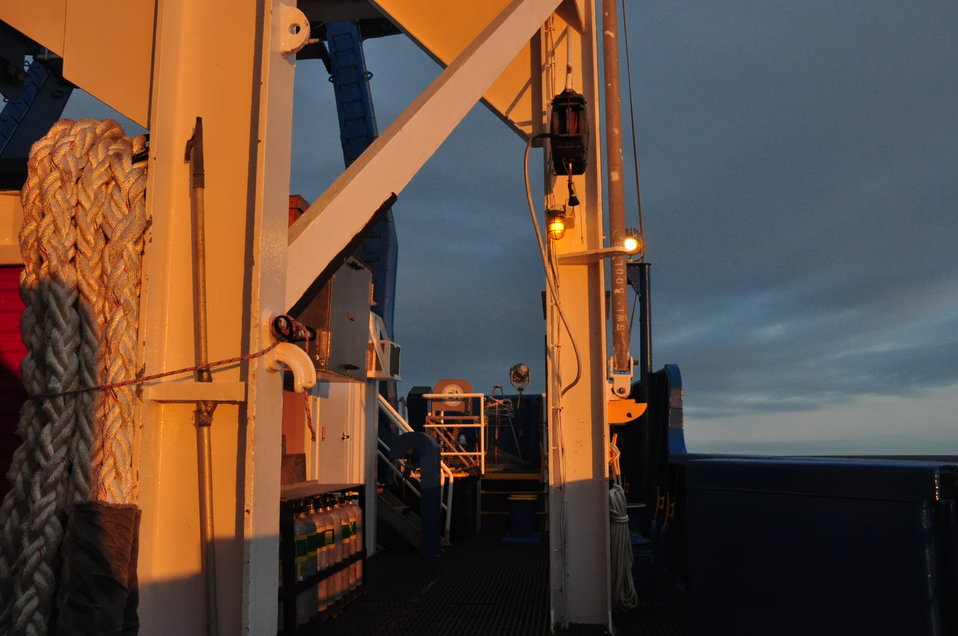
August 5, 2011 Port side at sunset